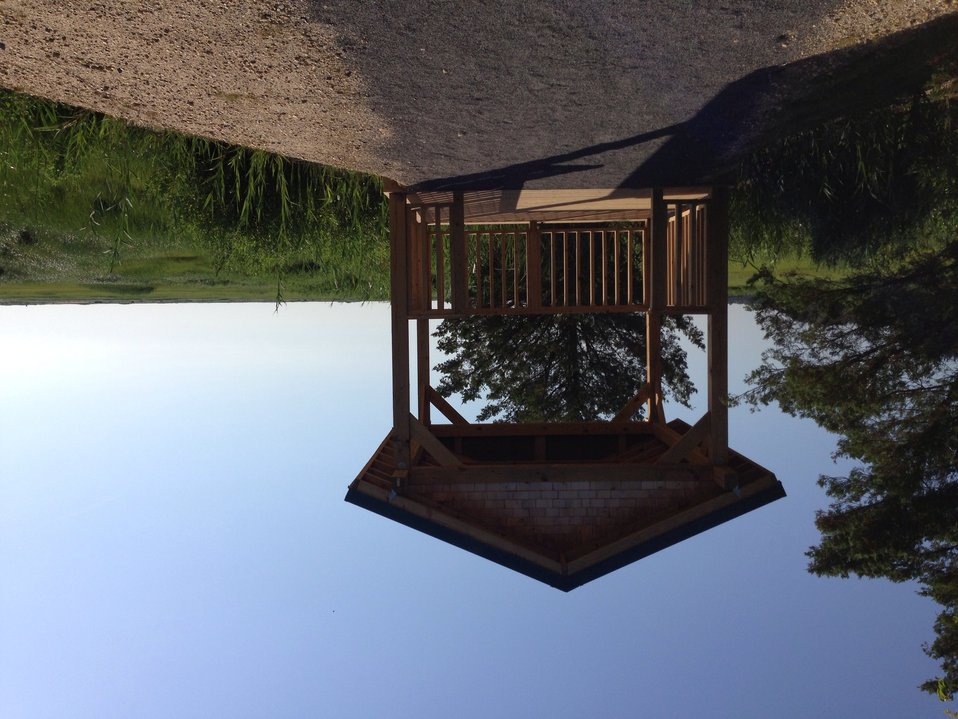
Forsythe wildlife drive after hurricane repairs

New gazebo overlook at the end of the Leed's Eco-trail.